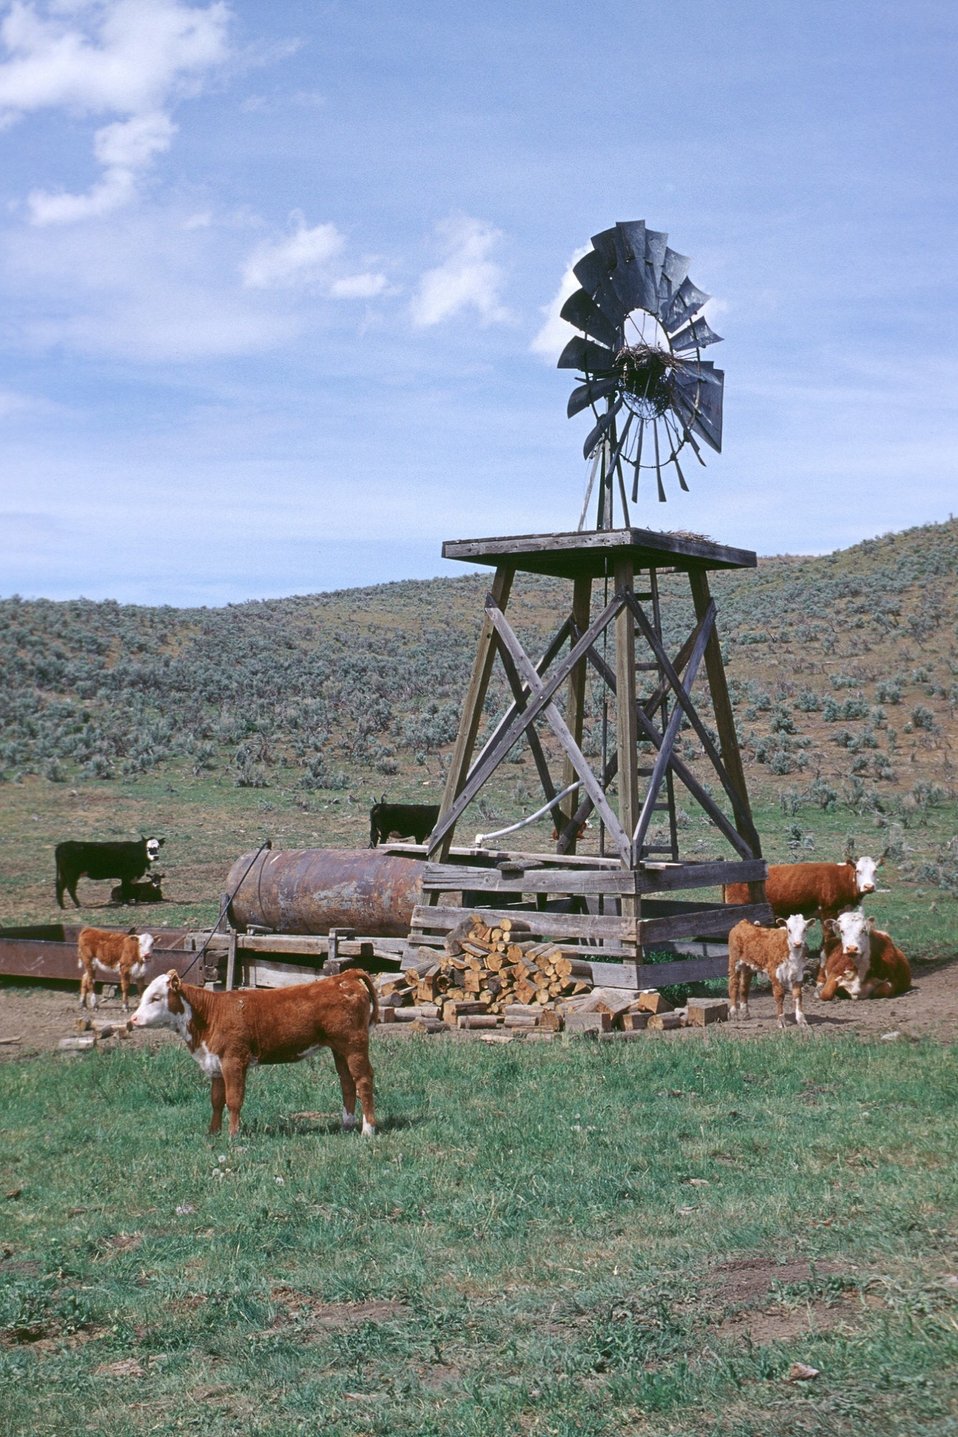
Old wind mill and cattle. Immigrant Flats, Baker City RA.